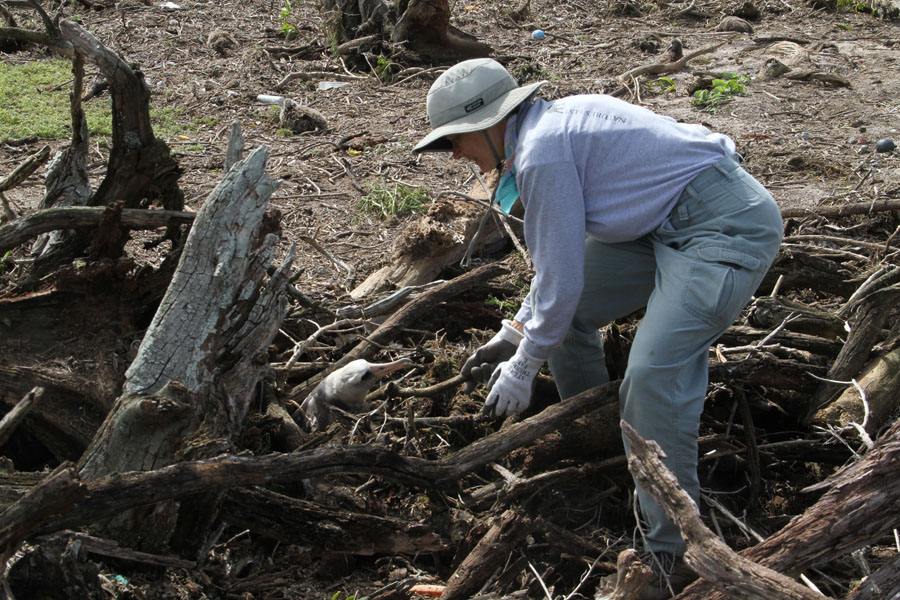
Laysan Albatross Rescue After Tsunami

The day after the 2011 Tsunami hit Midway Atoll National Wildlife Refuge a visitor from Galapagos Travels ecotourism company helped rescue seabirds trapped in debris.